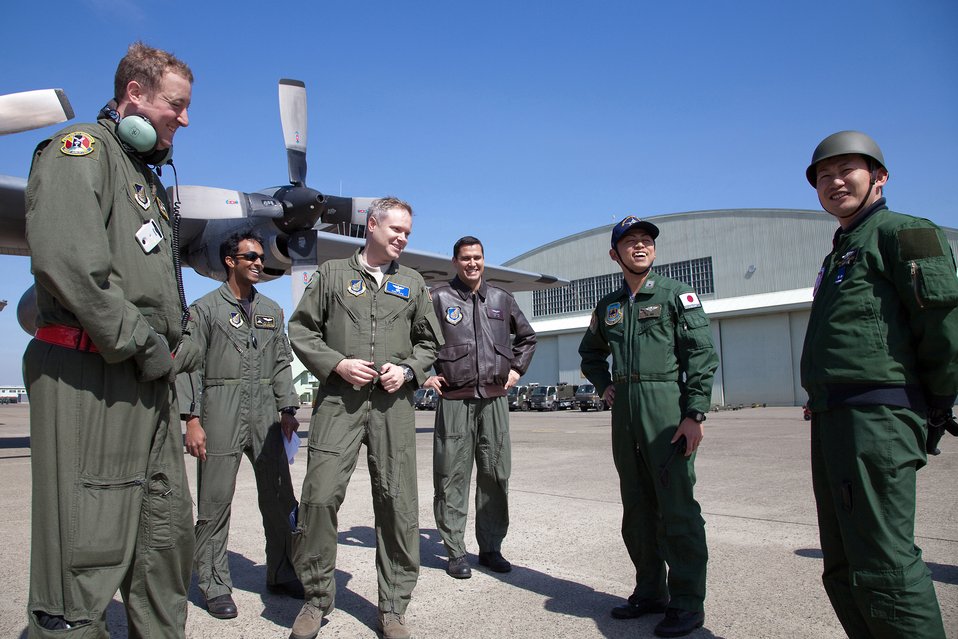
Airmen deliver boron

Airmen assigned to the 36th Airlift Squadron talk with members of the Japan Air Self-Defense Force March 19, 2011, at Hyakuri Air Base, Japan, after delivering seven pallets of boron there.